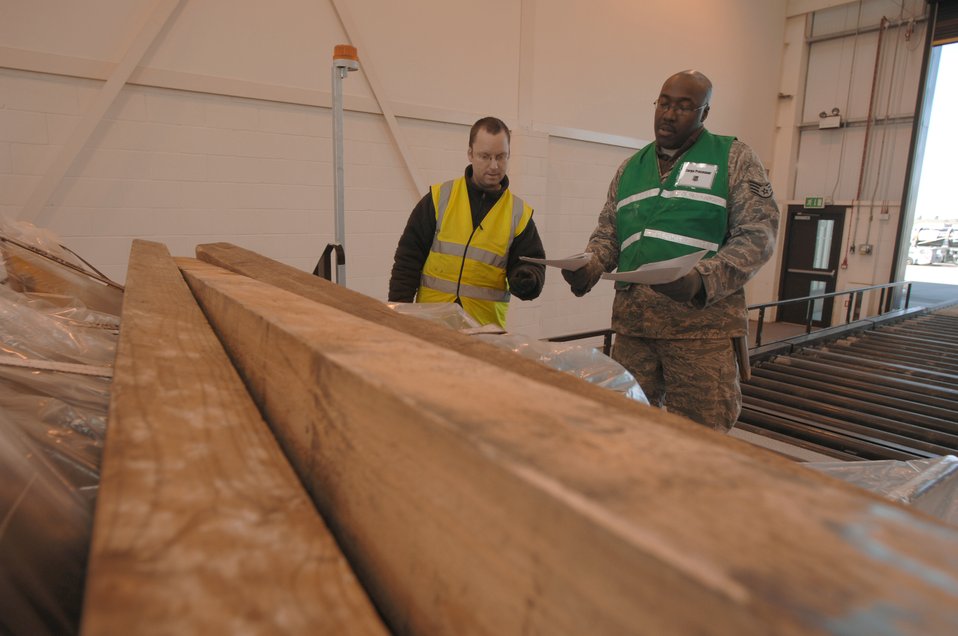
Odyssey Dawn

Mr. Stuart Knapp, 48th Logistics Readiness Squadron, hazardous material cargo inspector and Staff Sgt. Batten Vandochelle, 48 LRS, cargo inspector verify an equipment pallets information for deployment processing at RAF Lakenheath, England, March 19, 2011. Units from the 48th Fighter Wing are currently conducting pre-deployment procedures in support of Operation Odyssey Dawn. The 48th Fighter Wing provides all-weather, day or night air superiority and air-to-ground precision combat capability as well as combat search and rescue.